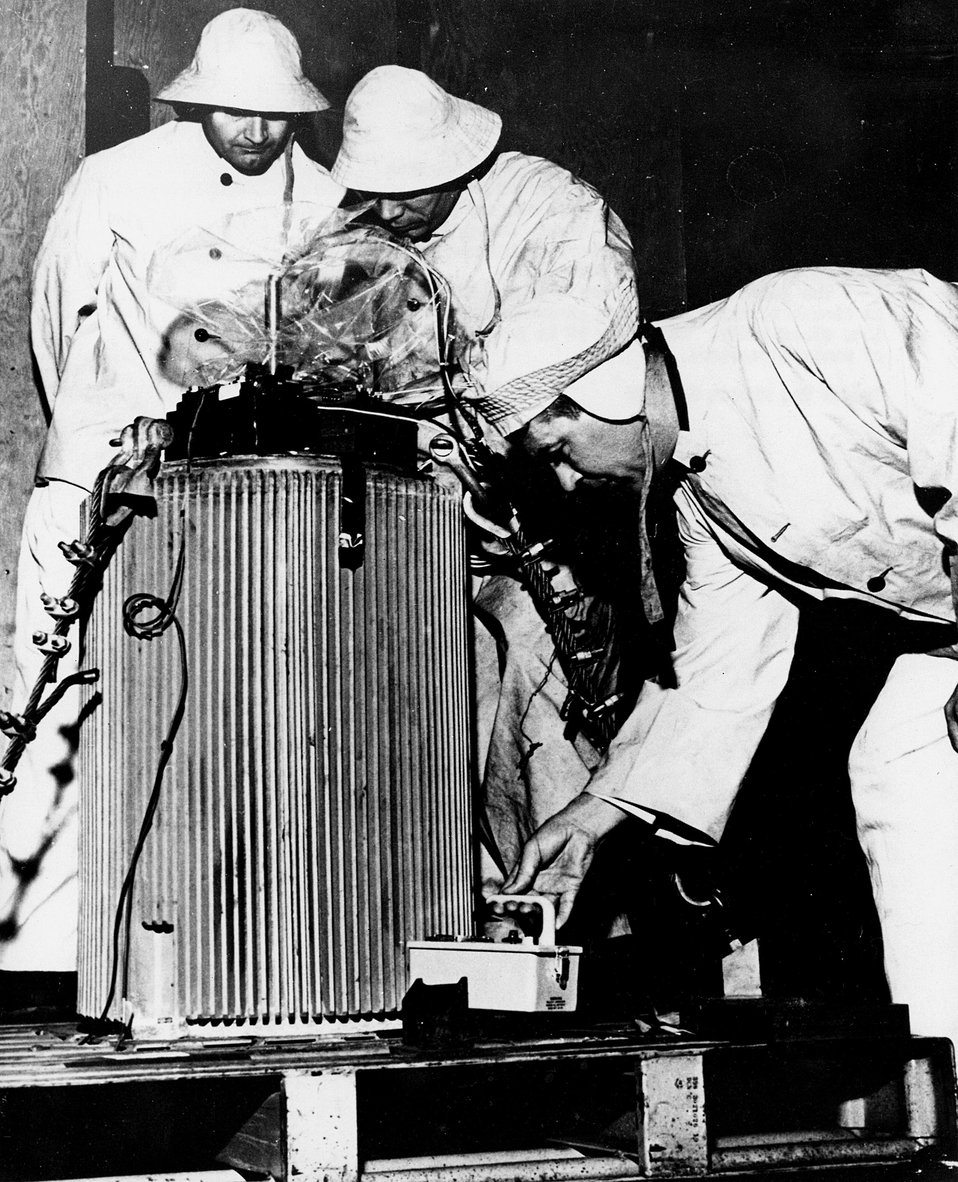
ATOMIC GENERATOR FOR A NOMAD-Engineers ready SNAP-7D, a 60-watt nuclear generator, for installation in a US Navy NOMAD weather boat.